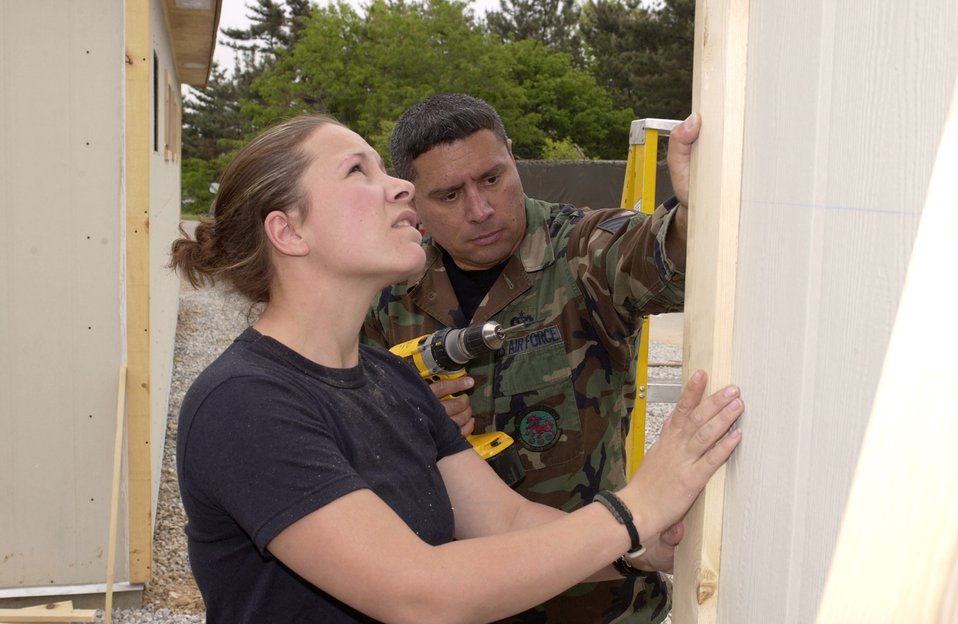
Civil engineers rid Kunsan of austere living conditions

Tech. Sgt. Paul Cucchiaran (right) and Staff Sgt. Jonnie Jordan place corner trim on a new Southeast Asia hut at Kunsan Air Base, South Korea. The $320,000 project replaced tents used by deployed servicemembers and allows for additional electricity, air conditioning and lighting. Sergeant Cucchiaran is with the 555th Red Horse Squadron at Nellis Air Force Base, Nev. Sergeant Jordan is with the 307th RHS at Barksdale AFB, La.